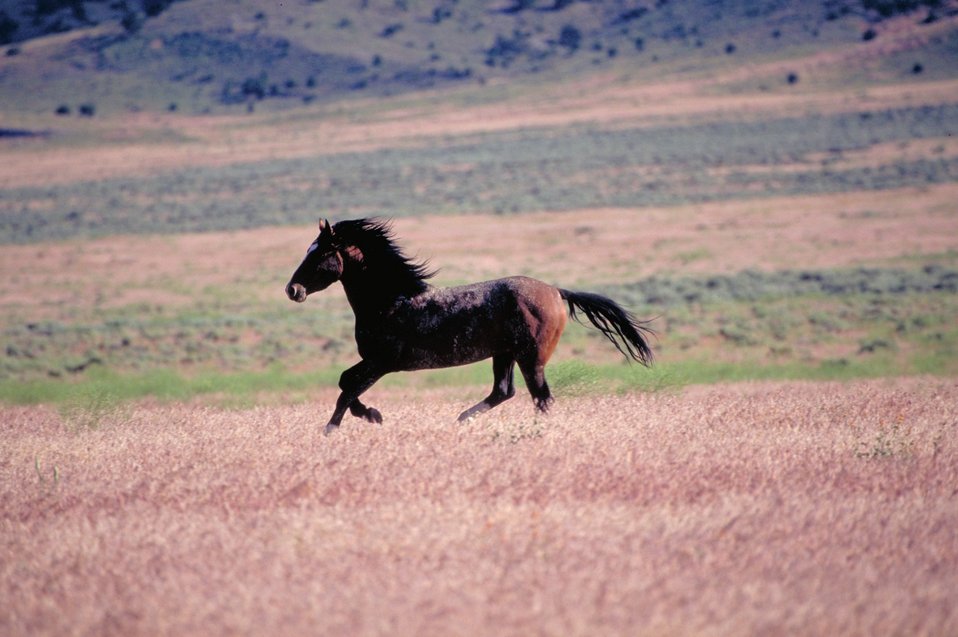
Onaqui Herd near Dugway, Utah.